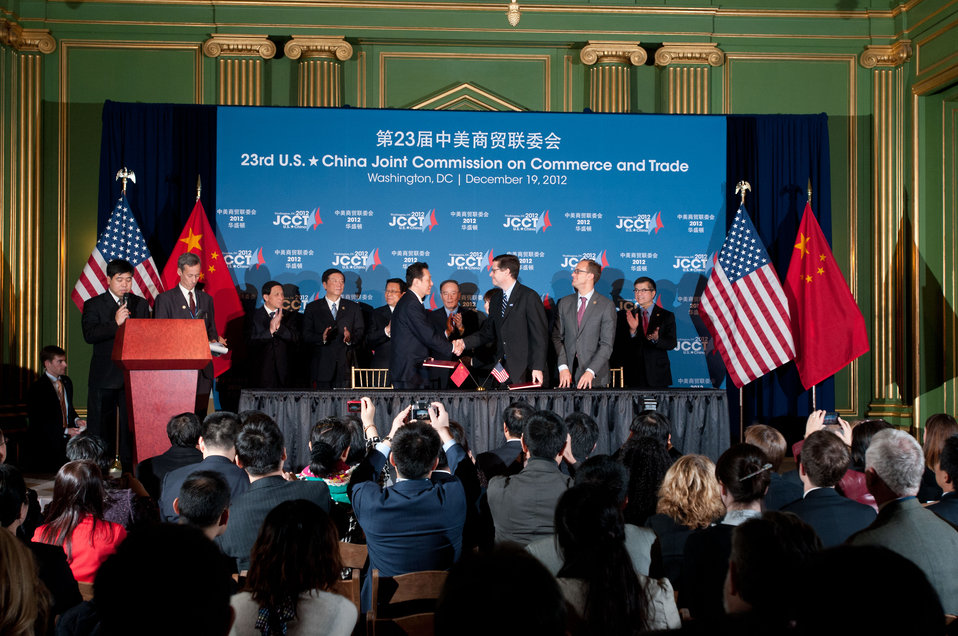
Chinese Ministry of Commerce Vice Minister Wang Chao and U.S. Acting Under Secretary of Commerce Mr. Mark Doms and then Deputy U.S. Trade Representative Ambassador Demetrios Marantis shake hands after signing The Second Phase Report on the Statistical Discrepancy of Merchandise Trade between the U.S. and China, with the support the principal leaders from the Chinese delegates and U.S. hosts, (L to R) China’s Ambassador to the United States Zhang Yesui, Vice Minister of Industry and Information Technology Liu Lihua, Chinese Minister of Commerce Chen Deming, Chinese Vice Premier Wang Qishan, Acting U. S. Commerce Secretary Rebecca Blank, U.S. Trade Representative Ron Kirk and U.S. Ambassador to China Gary Locke at the 23rd Session of the U.S. China Joint Commission on Commerce and Trade (JCCT) at the Andrew W. Mellon Auditorium in Washington, D.C. on Wednesday, Dec. 19, 2012. The JCCT holds high-level plenary meetings on an annual basis to review progress made by working groups that focus on a wide variety of trade issues. These working groups meet throughout the year to address topics such as intellectual property rights, agriculture, pharmaceuticals and medical devices, information technology, tourism, commercial law, environment, and statistics.